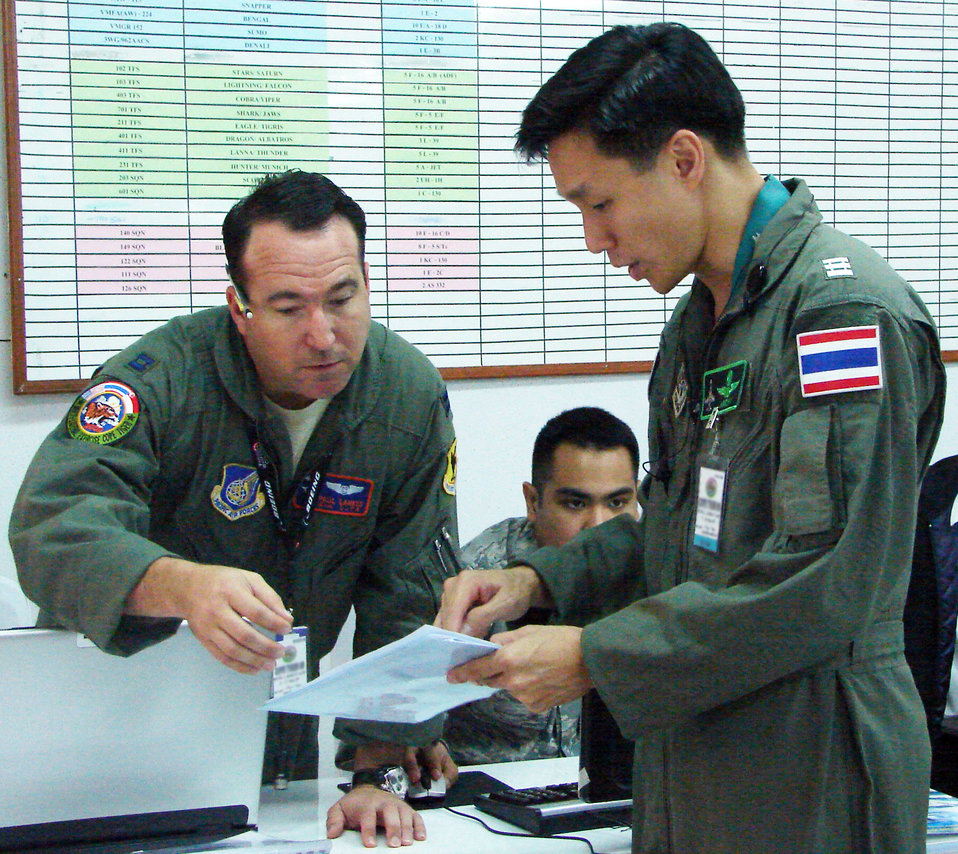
Exercise in Thailand shows multilateral partnership

Capt. Paul Lankes discusses the day's flying schedule with Royal Thai air force Wing Commander Arnon Charusombat March 11 at Korat Royal Thai air force base, Thailand. Wing Commander Charusombat and Captain Lankes both work in the live fly cell for Cope Tiger 2009. Cope Tiger is an annual, multilateral large force aerial exercise conducted in Thailand including U.S., Thai and Singaporean military forces. Captain Lankes is deployed from Kadena Air Base, Japan.